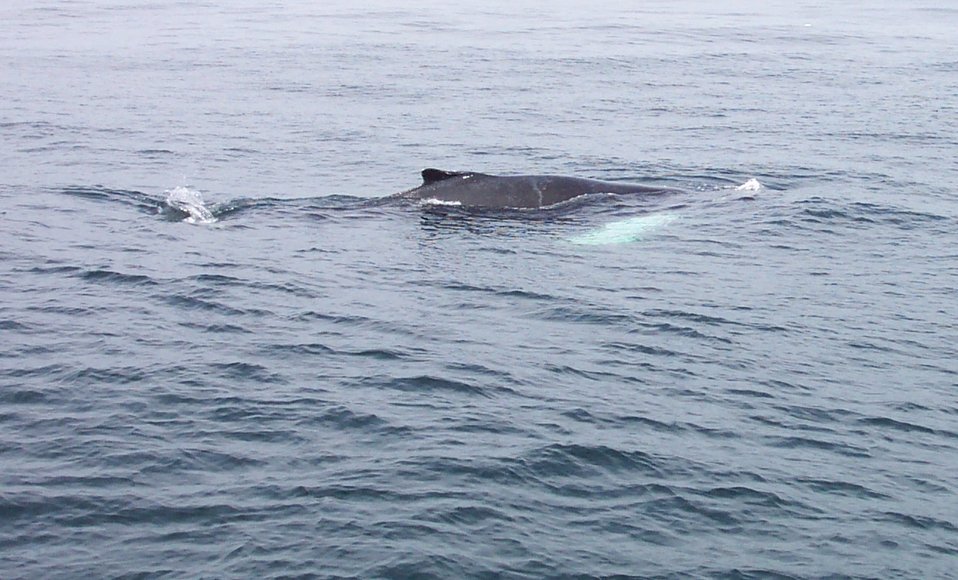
A humpback whale in the Gulf of Maine about 20 miles south of Bar Harbor.